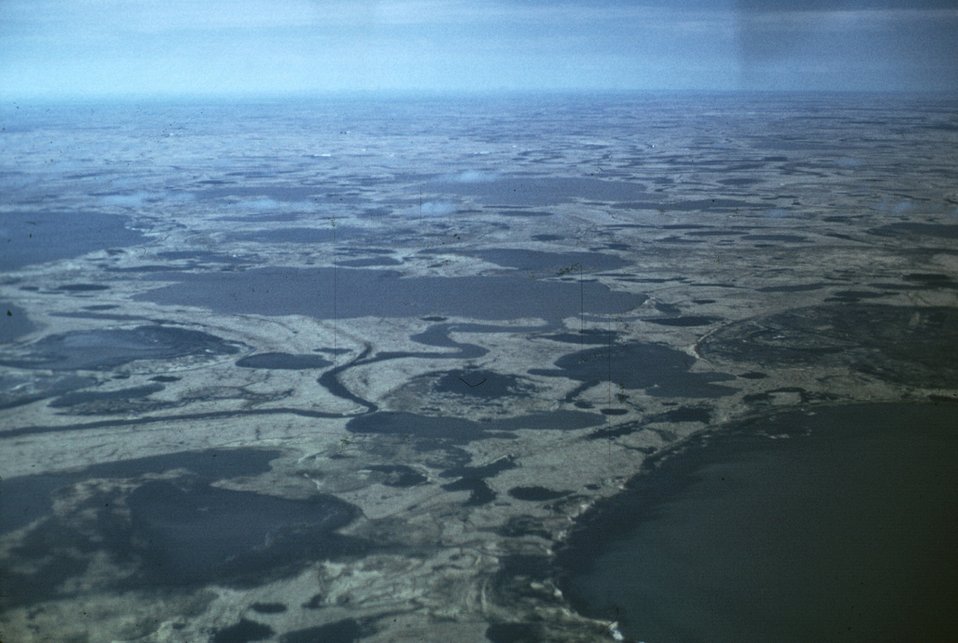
Aerial view of Clarence Rhode NWR, Seward Peninsula